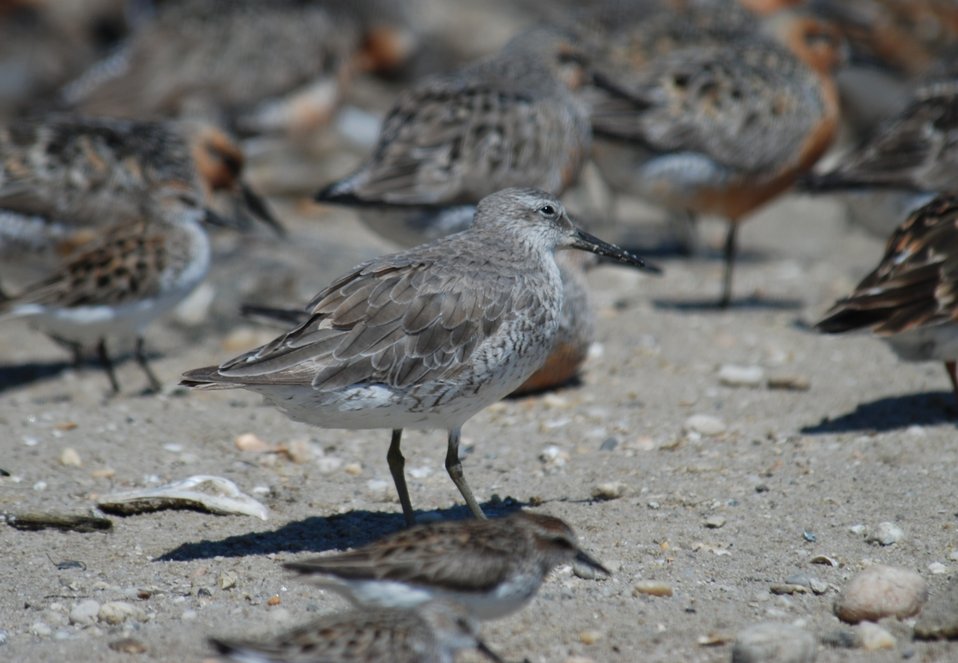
Red Knot Winter Plumage

Mispillion Harbor, Delaware.